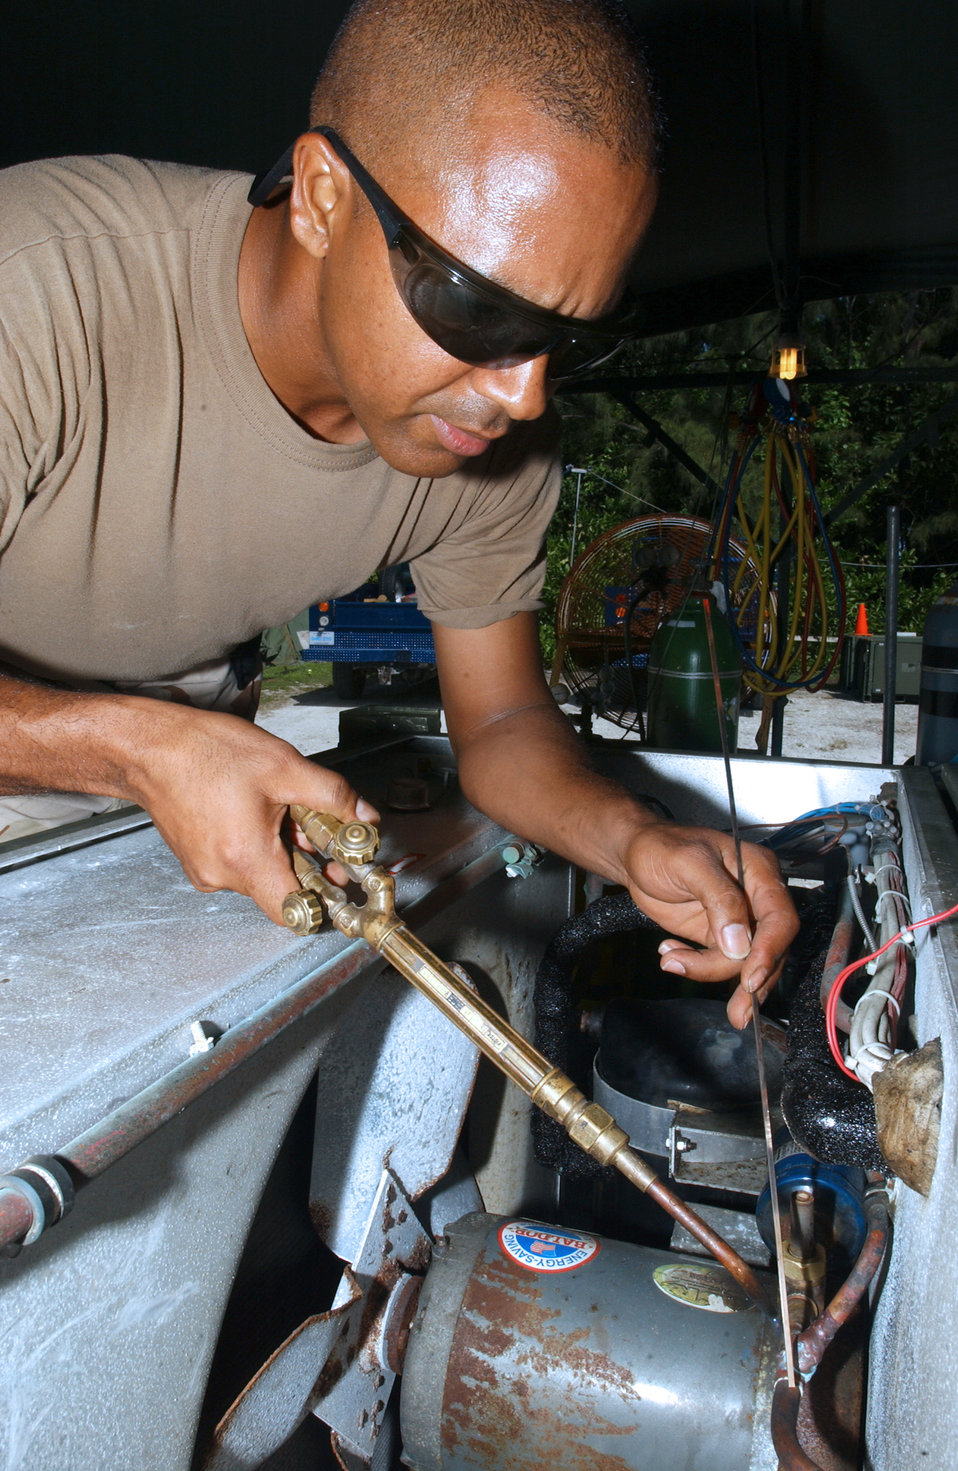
Guardsmen tackle challenges of keeping their cool

OPERATION ENDURING FREEDOM -- Staff Sgt. Jose Concepion repairs an environmental control unit used to cool tents at a forward-deployed location. He is assigned to the 40th Expeditionary Civil Engineer Squadron's heating, ventilation, air conditioning and refrigeration flight and is deployed from Muniz Air National Guard Base, Puerto Rico.